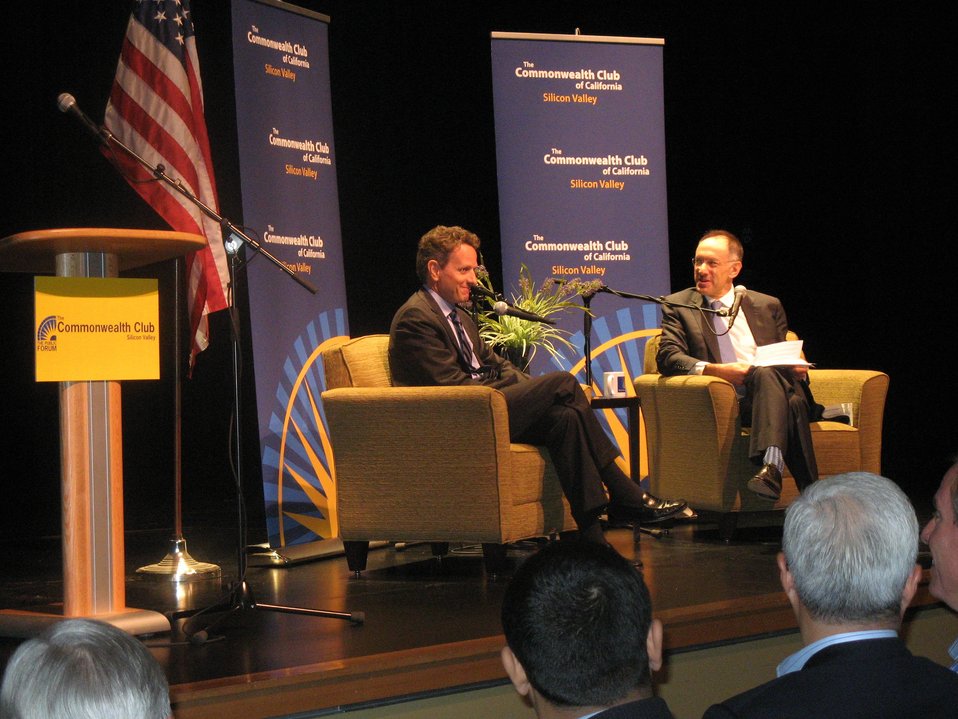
'A Conversation with Secretary Tim Geithner' hosted by the Commonwealth Club, 10/18/10

On Monday afternoon, Secretary Geithner delivered remarks at 'The State of the Economy: A Conversation with Secretary Tim Geithner' hosted by the Commonwealth Club in Palo Alto, CA.